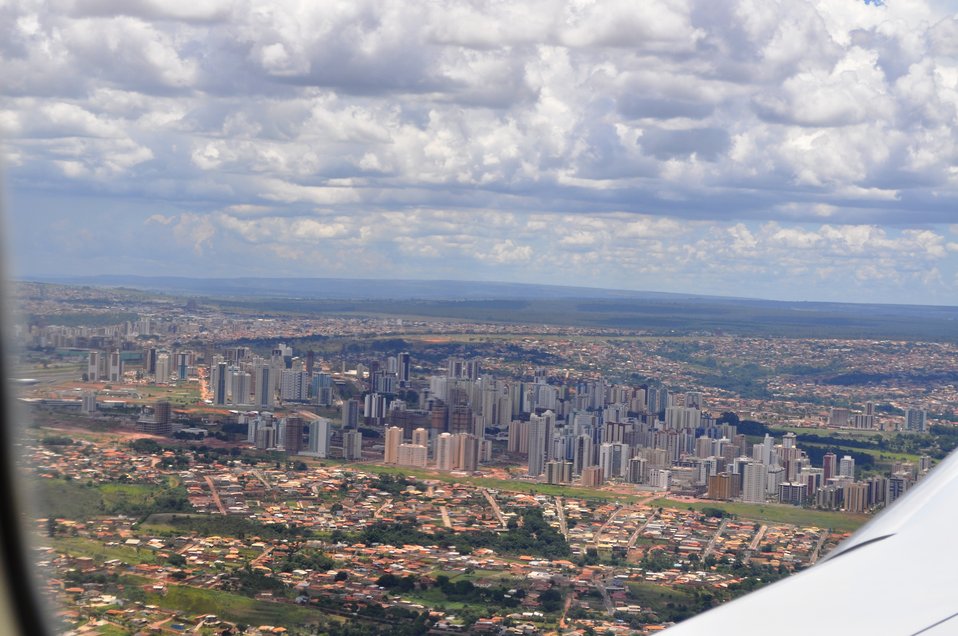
Secretary Geithner Travels to Brazil, 02/07/2011

Leaving Sao Paulo for Brasilia, Brazil.